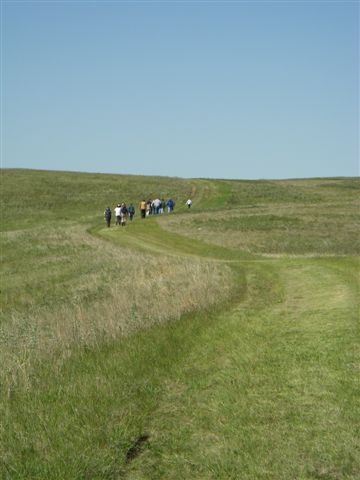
Lostwood National Wildlife Refuge

Hiking group on the Lostwood National Trail during the Birding Festival.